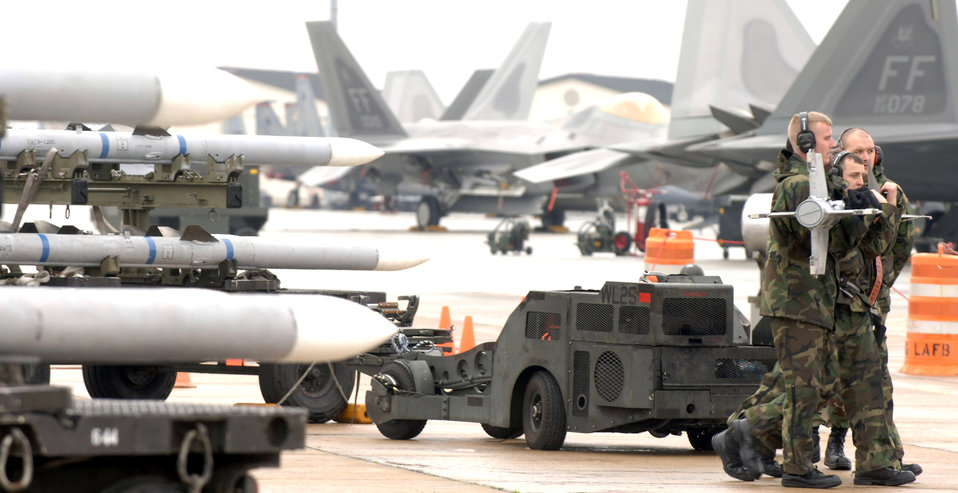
Loading up for competition

Staff Sgt. Andre Rice, Senior Airman Patrick Webb, and Senior Airman Scott McCans prepare to load a missile on an aircraft during the annual Load Competition Jan. 18 at Langley Air Force Base, Va. The competition evaluates technical proficiency, safety procedures and overall time.